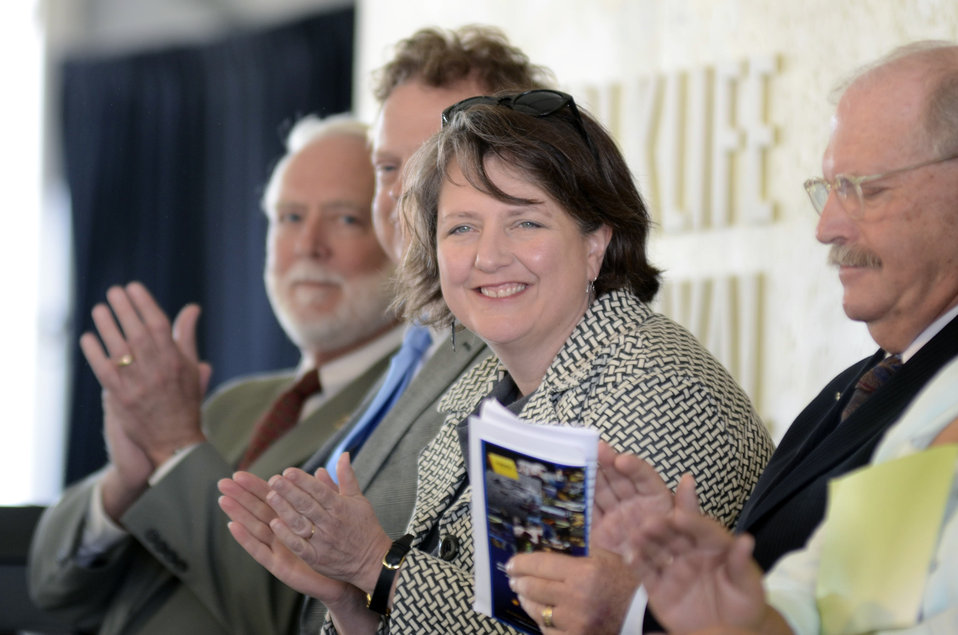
Agriculture Deputy Secretary Kathleen Merrigan applauds a performance at the opening ceremony for the 2012 Smithsonian Folklife Festival in Washington, D.C. on Wednesday, June 27, 2012. This year’s festival features three themes; “Creativity and Crisis” celebrates the 25th anniversary of the AIDS Memorial Quilt, “Citified,” explores the rich culture and community of neighborhoods east of the Anacostia, and the third “Campus and Community” celebrates 150 years of USDA and the Land-Grant university system.